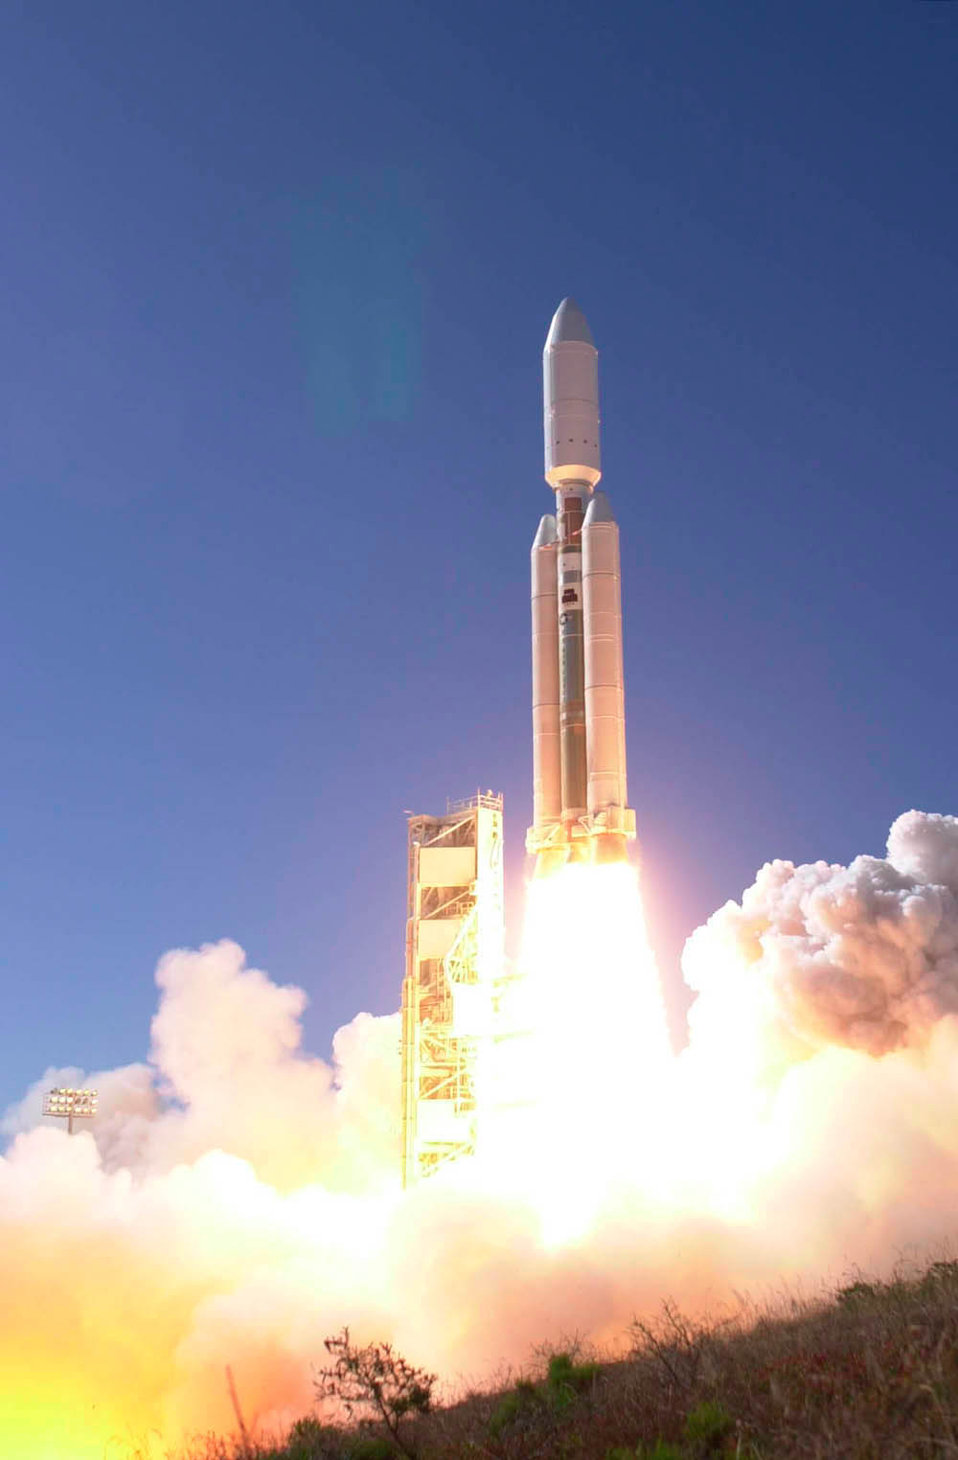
Titan rocket

VANDENBERG AIR FORCE BASE, Calif. -- A Lockheed Martin-built Titan IV B rocket successfully launched a classified payload for the U.S. Air Force and the National Reconnaissance Office August 17, 2000. The NRO is the U.S. government agency responsible for reconnaissance satellites. The launch was from Space Launch Complex Four East here. This was the second Titan IV launched successfully this year and the 30th Titan IV launch overall. The Titan IV-B is capable of boosting payloads weighing 38,800 pounds into low-Earth polar orbit, 47,800 pounds into low-Earth equatorial orbit, or more than 12,700 pounds into geosynchronous orbit.